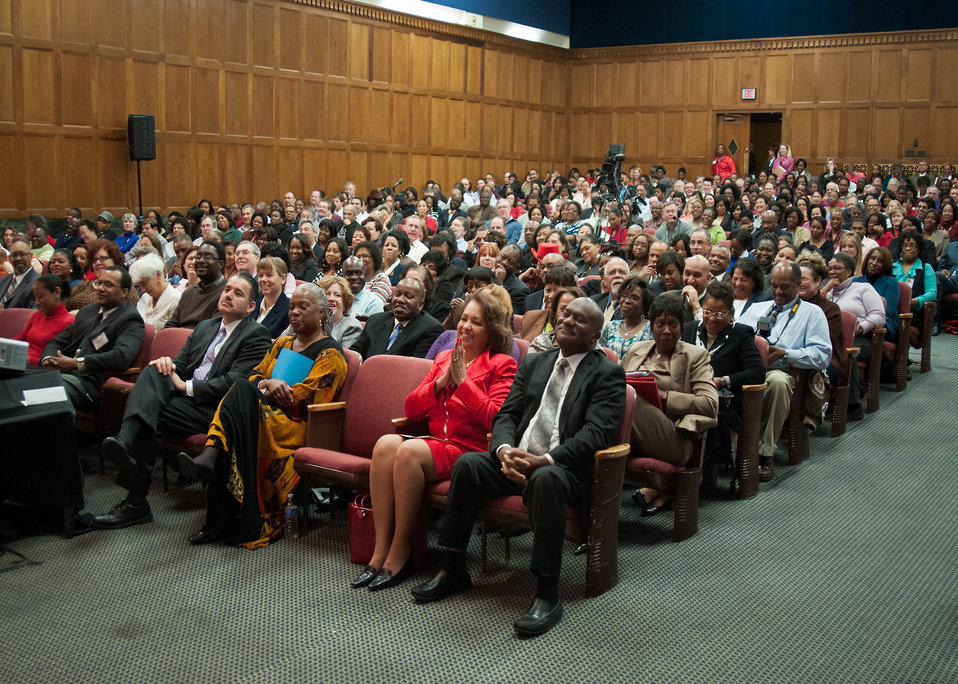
Front row from left: Oscar Gonzales, Deputy Assistant Secretary for Administration, Audrey Rowe, Administrator, Food and Nutrition Service, Daphne Reid and Pearlie Reed, Assistant Secretary for Administration United States Department of Agriculture employees and guests listen to Tim Reid Actor, Comedian, Filmmaker and Social Activist at the United States Department of Agriculture Black History Month celebration “Black Women in American Culture and History” in Washington, D.C. on Thursday, February 16, 2012.